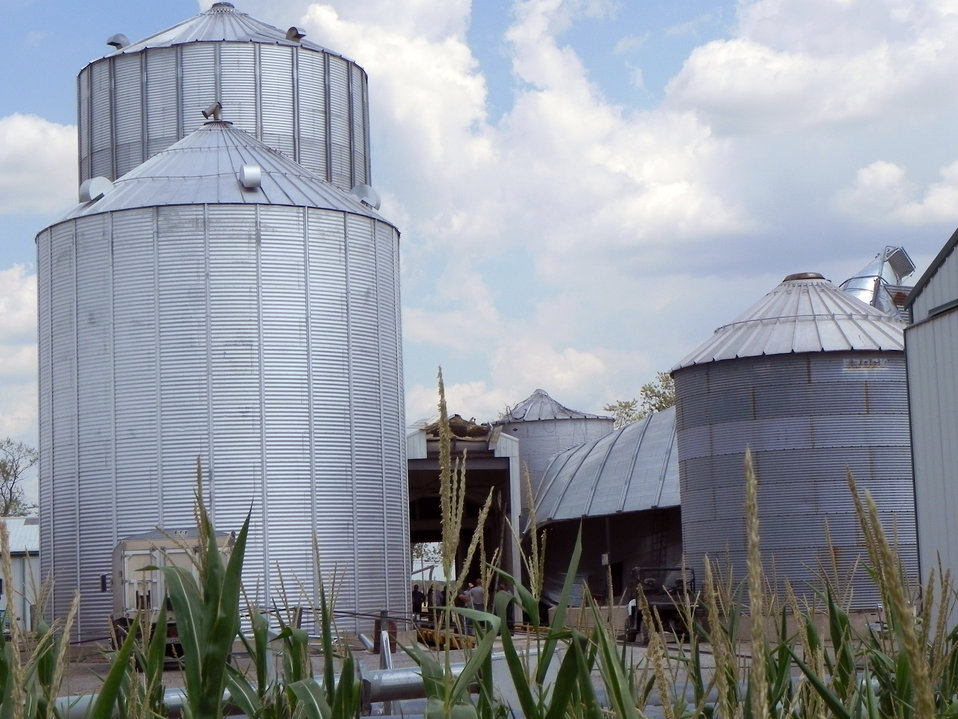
Several buildings suffer damage from a severe storm on the Goyings farm in Paulding County, OH on June 29, 2012.